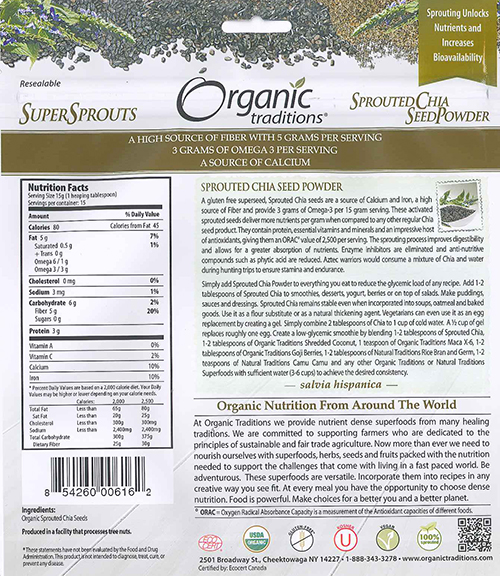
RECALLED – Chia and Flax seed powder

June 4, 2014 – Product Recall – Health Matters America, Inc, Recalls Organic Sprouted Chia Seed Powder and Sprouted Chia/flax Seed Powder Due to Possible Health Risk.